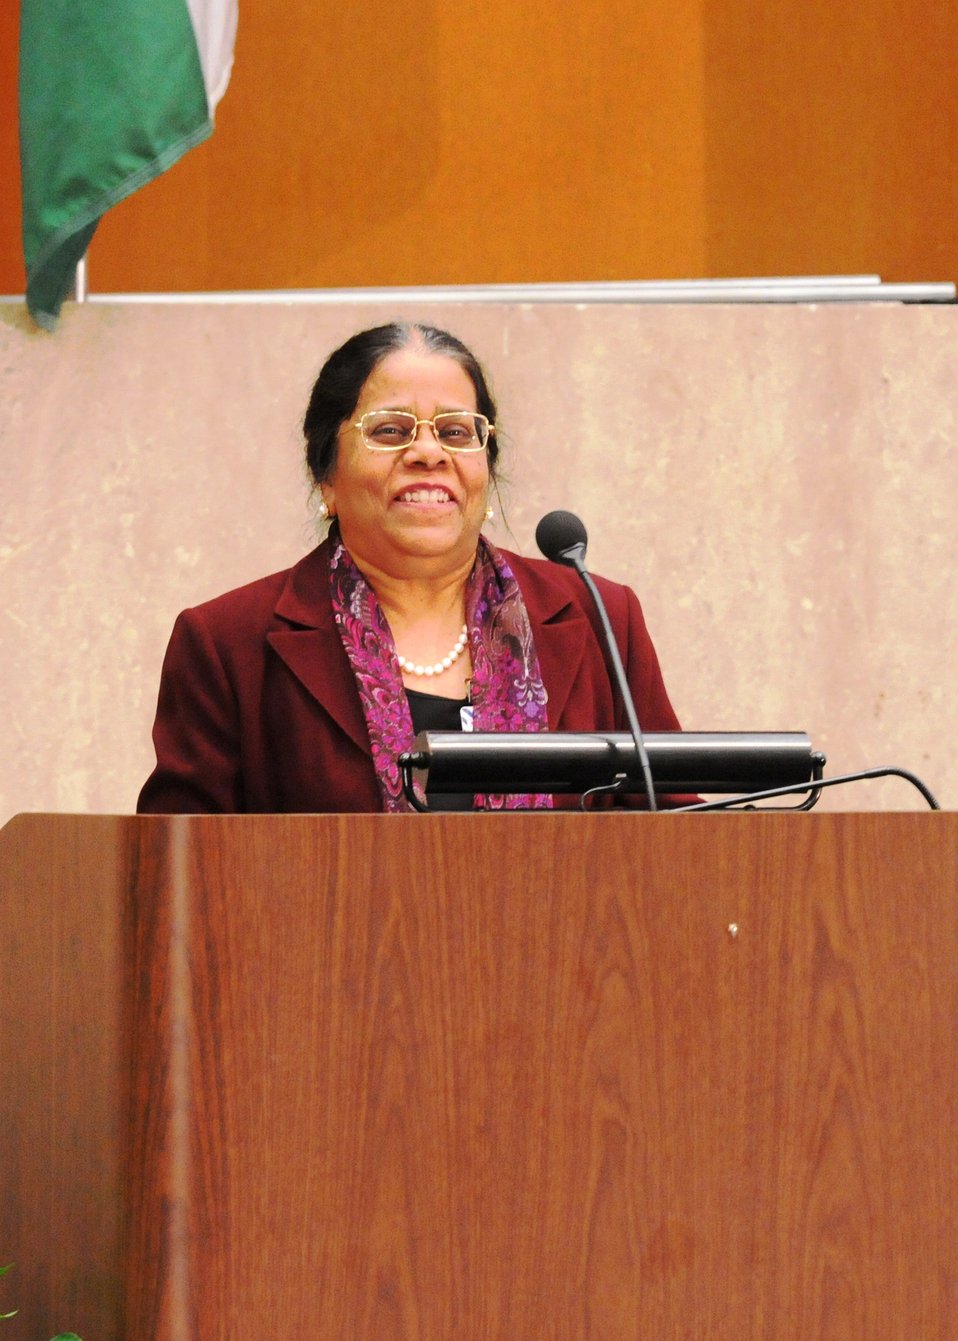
Indian American Leadership Council President Dr. Edwards Welcomes Participants

Dr. Kamala Edwards, President of the Indian American Leadership Council (IALC) welcomes participants at the U.S.-India People to People Conference held at the U.S. Department of State in Washington, D.C., on October 28, 2010.